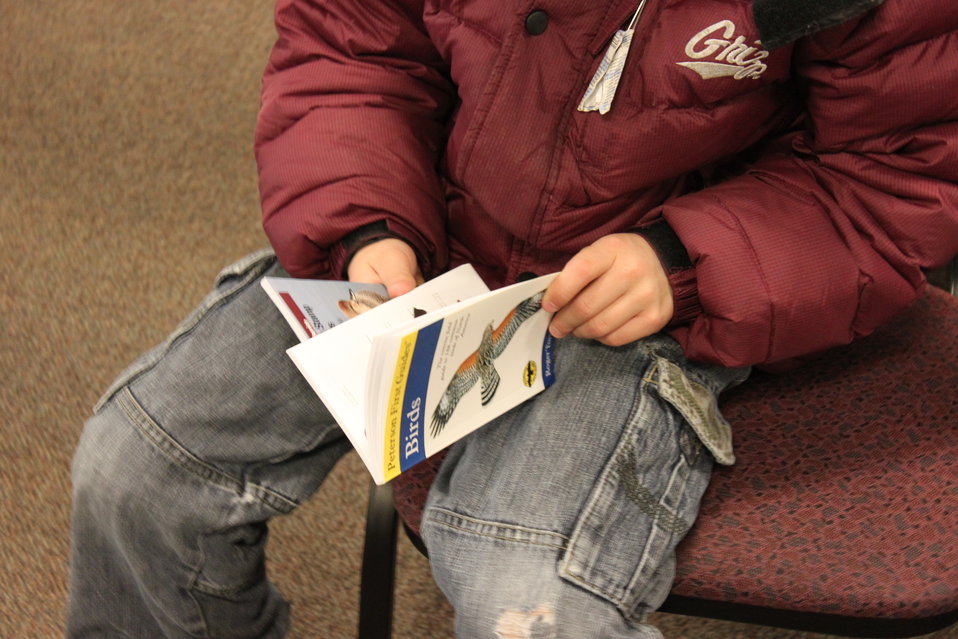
Studying First Field Guide

Christmas Bird Count for Kids (CBC4Kids) received field guides.
Staff provided overview of identifying birds. Students followed along using the intro section of the Peterson Field Guide.